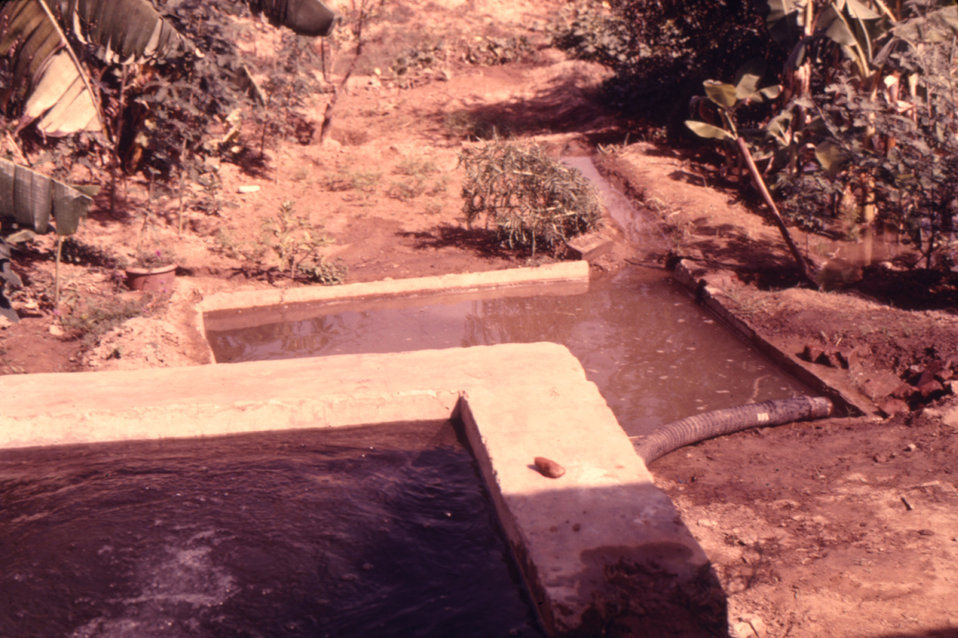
This 1974 image of an irrigation well was taken during a trip by CDC personnel to Northern India to study rhesus monkeys.